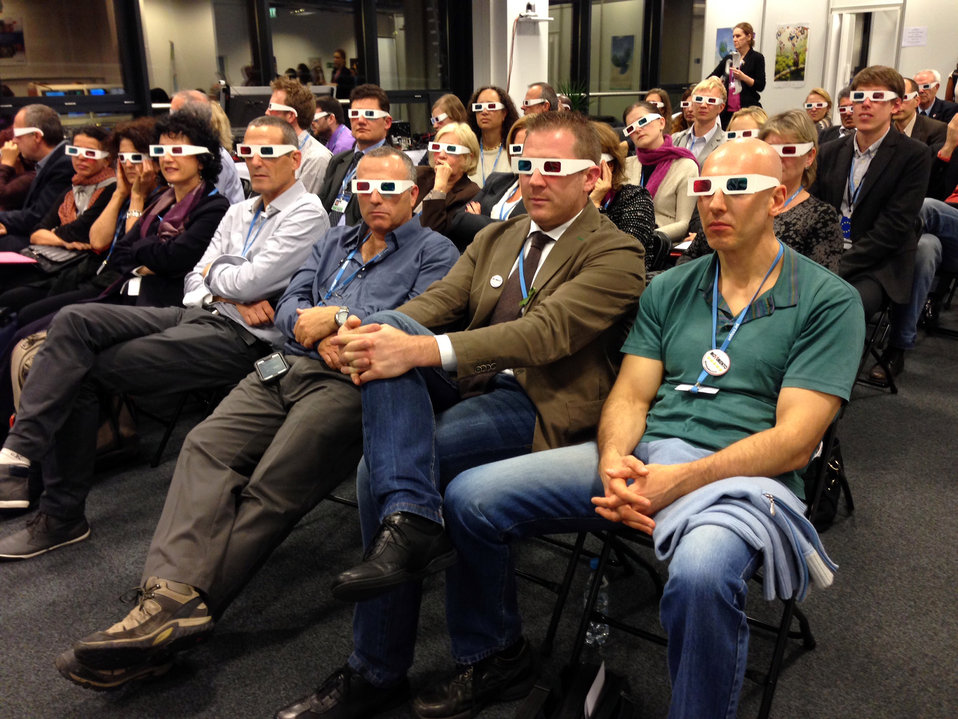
NASA's Eyes on the Earth 3-D

Visitors at the U.S. Center fly along with NASA's fleet of Earth science missions and observe Earth from a global perspective in an immersive, 3-D environment at the 19th Session of the Conference of the Parties to the UN Framework Convention on Climate Change (COP19) in Warsaw, Poland, on November 19, 2013. Experience Eyes on the Earth 3-D online at: climate.jpl.nasa.gov.